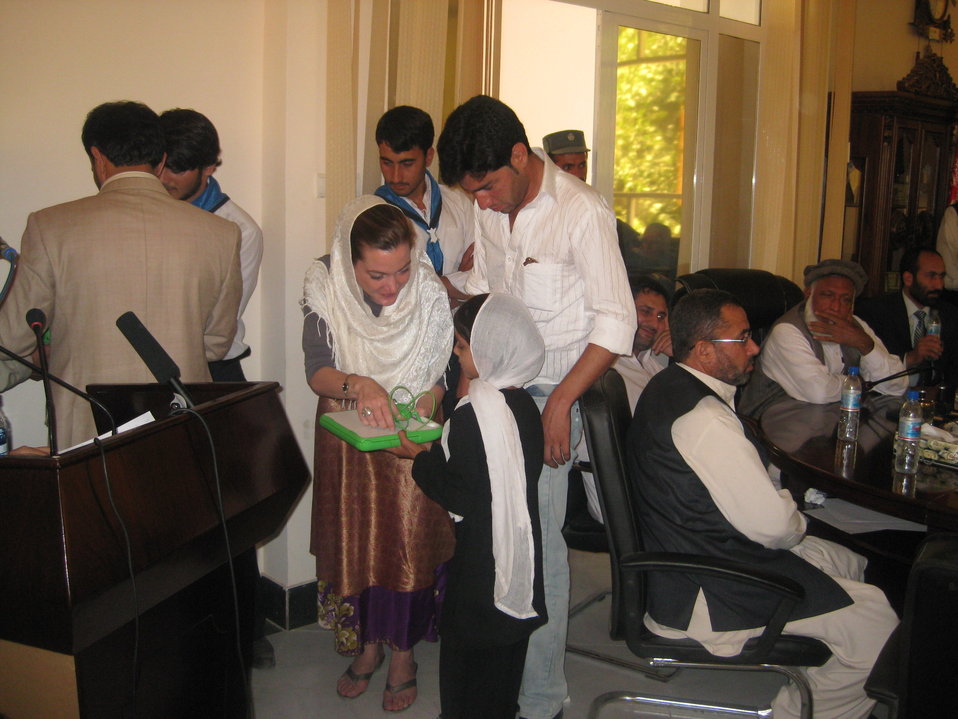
One Laptop Per Child Program Distributes Laptops in Baghlan